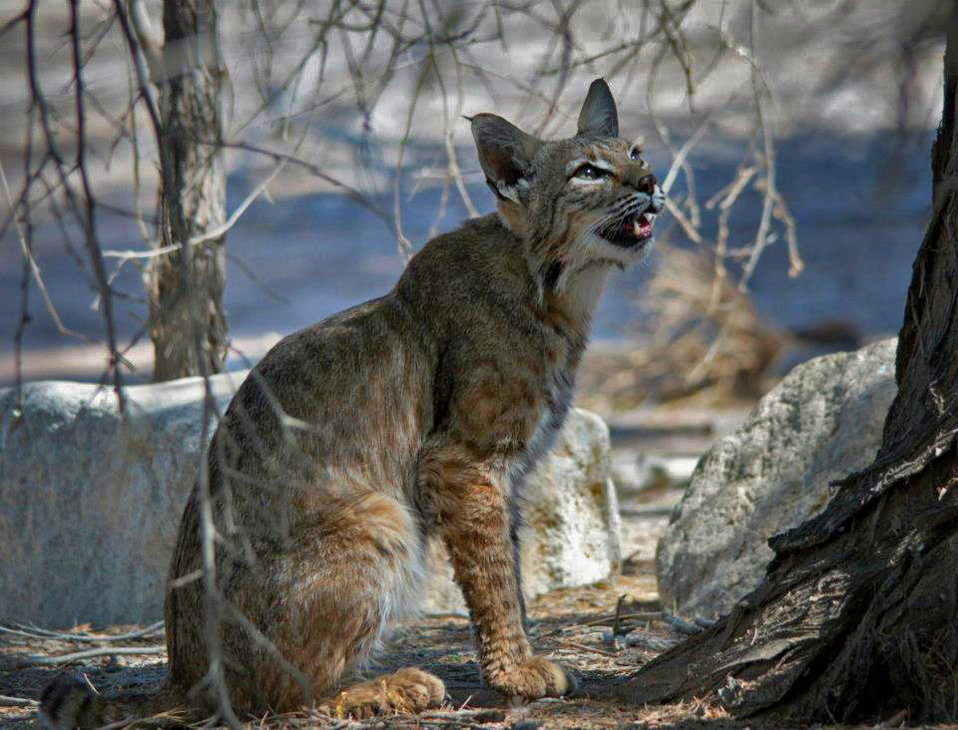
Bobcat at Sonny Bono NWR-3

These photos are taken in the evening very close to the Sonny Bono National Wildlife Refuge visitor center. (Photo by Mark Stewart/USFWS)

From the photographer: 'We have a lot of cover, a small pond and lots of rabbits. We have at least one family of Bobcats and I am expecting to see their kittens soon. They are used to people, but I use a 500 mm lens so as not to interfere with their normal activities.' -- Mark Stewart